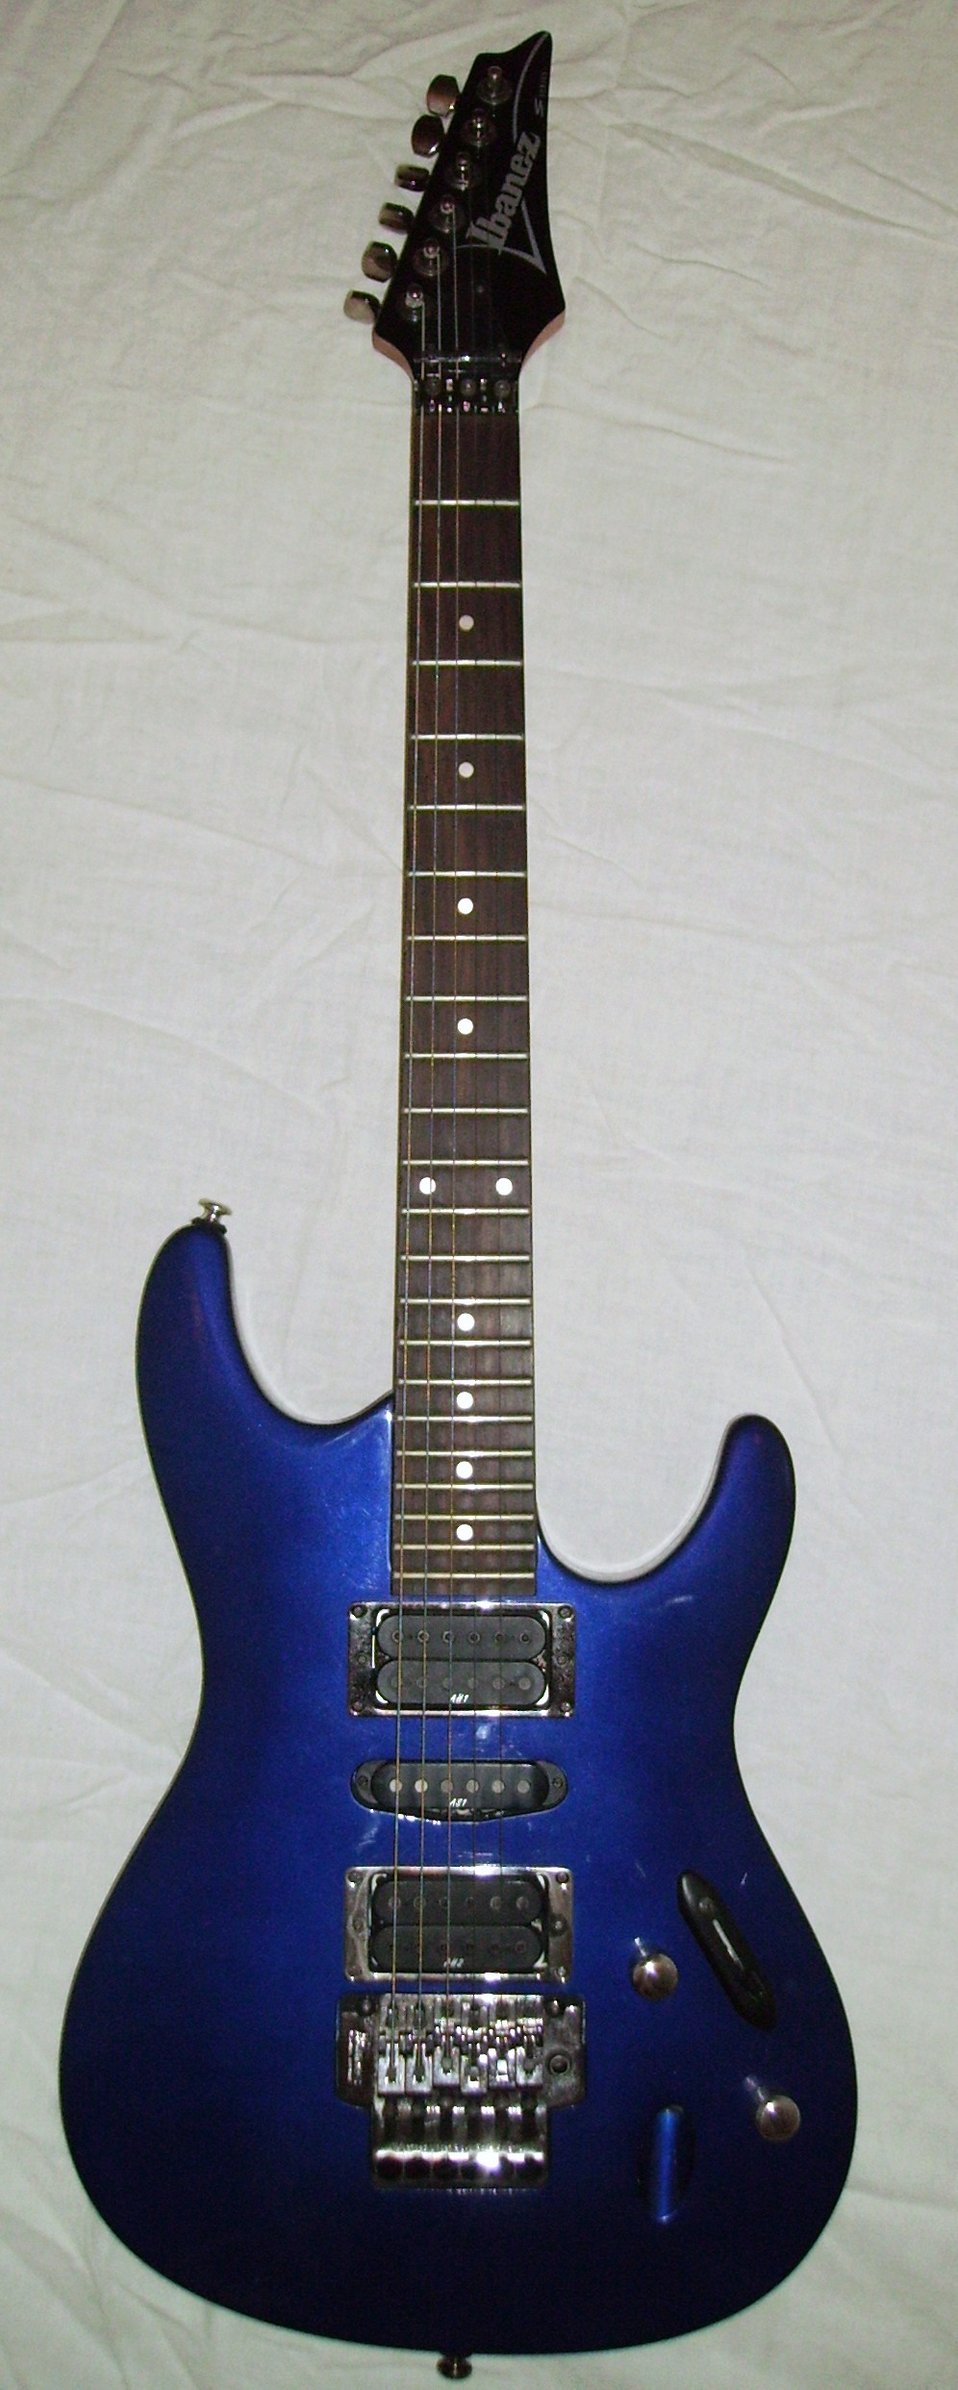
An Ibanez S-470 guitar